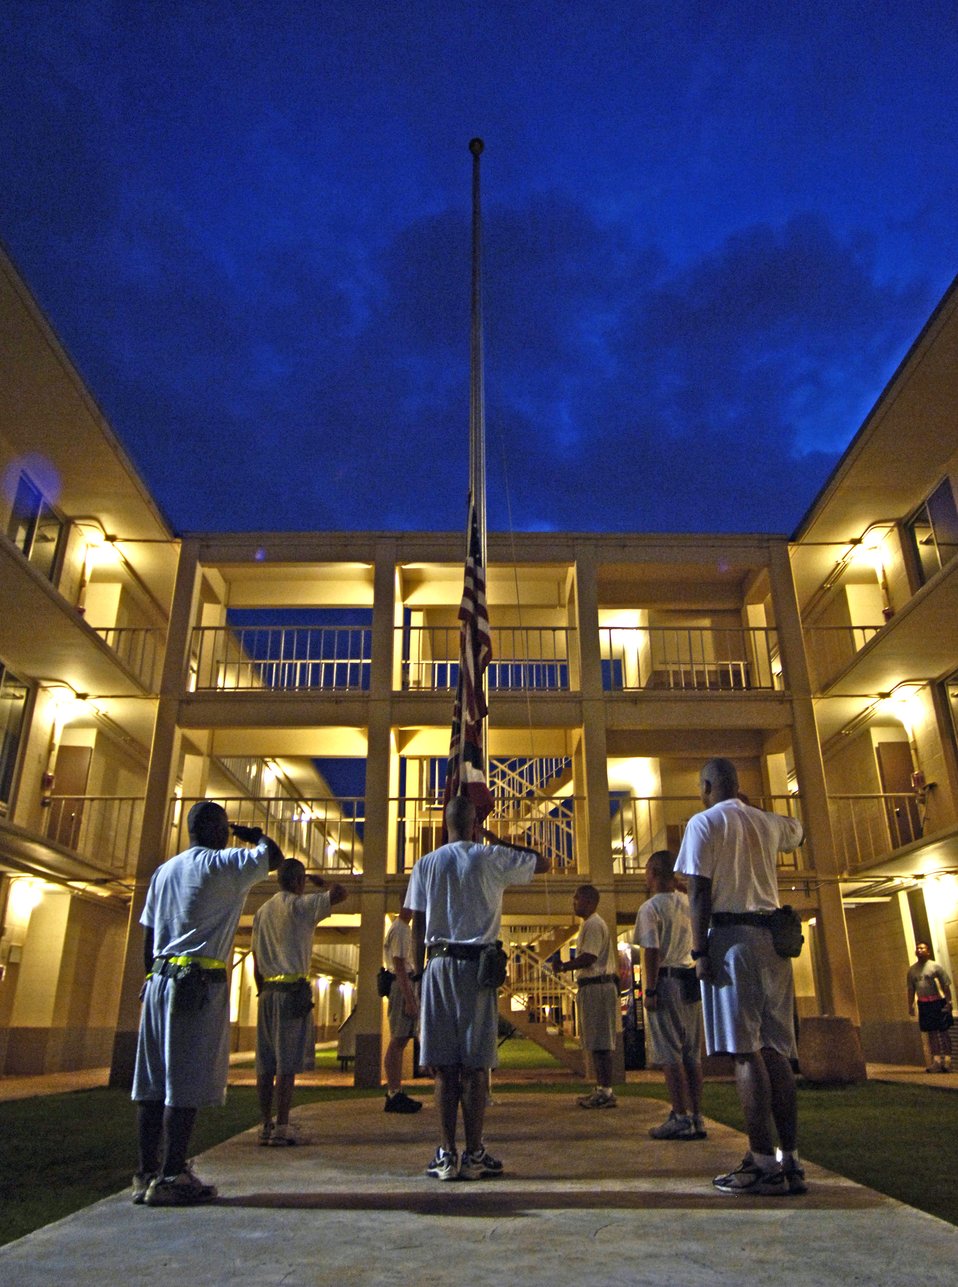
National Guard program helps at-risk teens

Cadets salute the flag at the Hawaii National Guard Youth Challenge Academy in Kapolei, Hawaii, on Thursday, May 18, 2006. The academy staff teach life skills to non-traditional students so they can be successful in the community and earn a high school diploma.